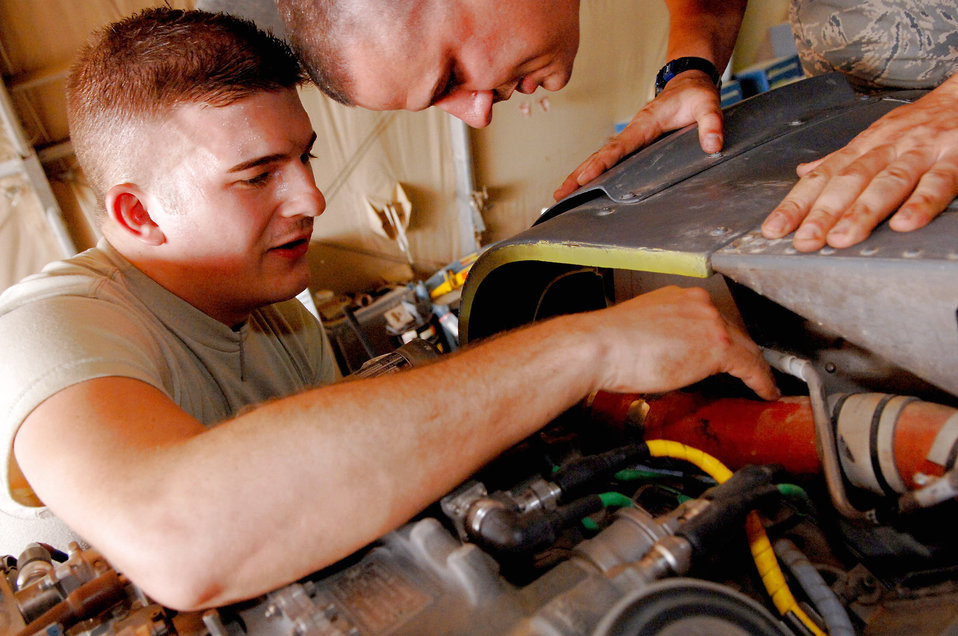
Helo maintenance

Airman 1st Class Donald Baker (left) and Staff Sgt. Tait Delzer install the left engine air intake on an HH-60 Pave Hawk helicopter March 12 at Balad Air Base, Iraq. Airman Baker and Sergeant Delzer, crew chiefs with the 64th Expeditionary Helicopter Maintenance Unit, performed an inspection on the aircraft after it had been flown 300 hours. As part of the preventative maintenance inspection, they checked all major components to ensure they were in working order. Both Airman Baker and Sergeant Delzer are deployed from Moody Air Force Base, Ga.